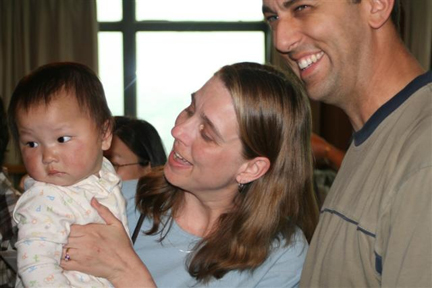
Bringing Sarah home

Master Sgt. Allen and Dawn Orahood are all smiles after meeting Sarah AlisonMei Orahood, their newly adopted daughter. The couple started the adoption application process in August 2005; however, because of a back-logged adoption system in China, a standard nine-month adoption process took 26 months. Sergeant Orahood is assigned to the 52nd Maintenance Group at Spangdahlem Air Base, Germany.